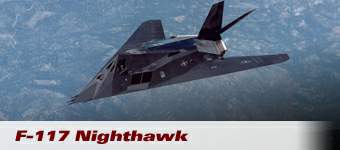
F-117 Nighthawk

The F-117 Nighthawk first flew in June 1981 over the Tonopah Test Range, Nev.